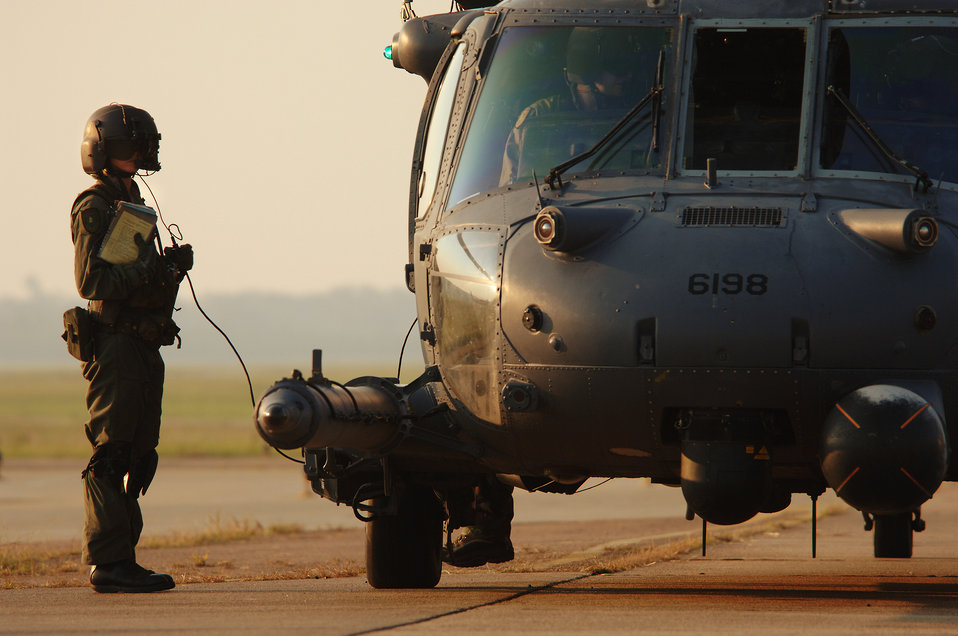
Airmen 'pave' way for help

JACKSON, Miss. -- HH-60G Pave Hawk helicopter aircrews continue to fly search-and-rescue missions hoping to find stranded victims of Hurricane Katrina's devastating aftermath. Airmen from active-duty and Reserve units are here supporting the hurricane's rescue operation. As of Sept. 7, the rescue operation has extracted more than 4,000 people trapped by flood waters.